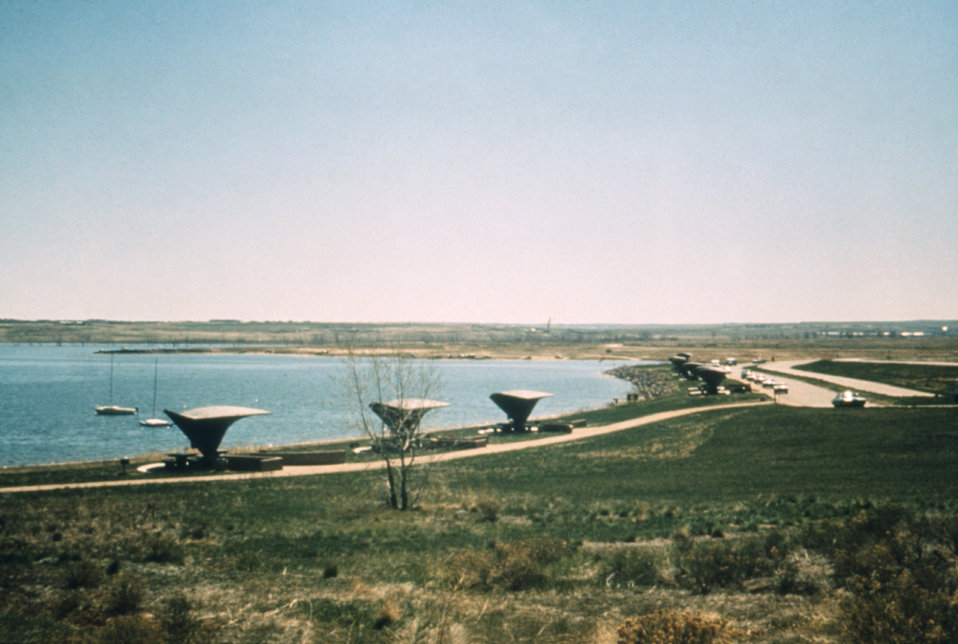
This 1976 photograph shows a number of picnic shelters along a lake shore in Colorado.